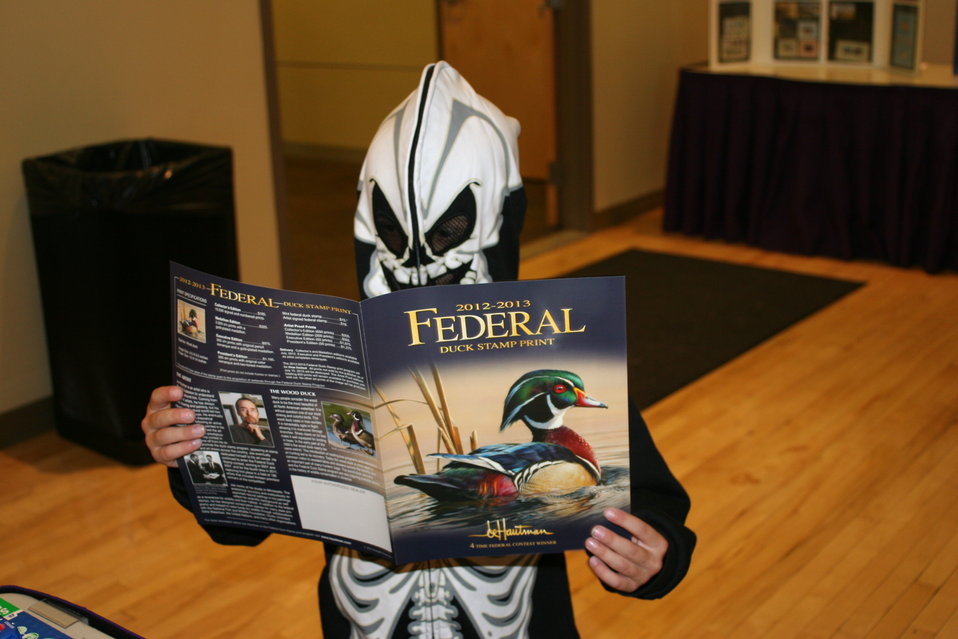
Even Skeletons Love Duck Stamps

Photo Credit: Suzanne Fellows / USFWS
The U.S. Fish & Wildlife Service sponsored the 2012 Federal Duck Stamp Art Contest September 28 and 29 in Ogden, Utah, at Weber State University. A panel of five judges was responsible for choosing the art work used to design the 2013-2014 Migratory Bird Hunting and Conservation Stamp.